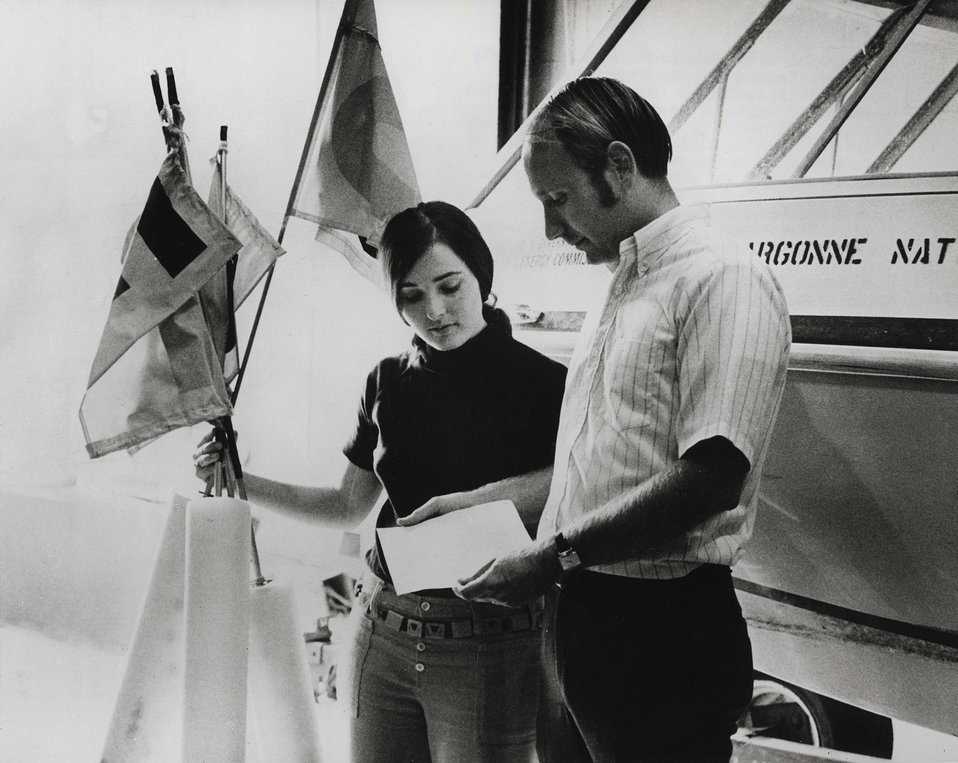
A participant in the Argonne 1971 Summer Student Training Program listens attentively while an Argonne limnologist explains the techniques of mapping a thermal plume in Lake Michigan.